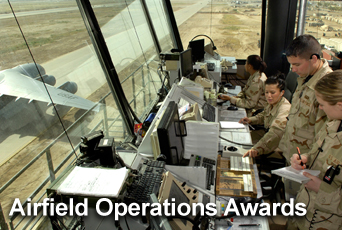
Airfield Operations Awards

Air Force officials announce Airfield Operations Awards.